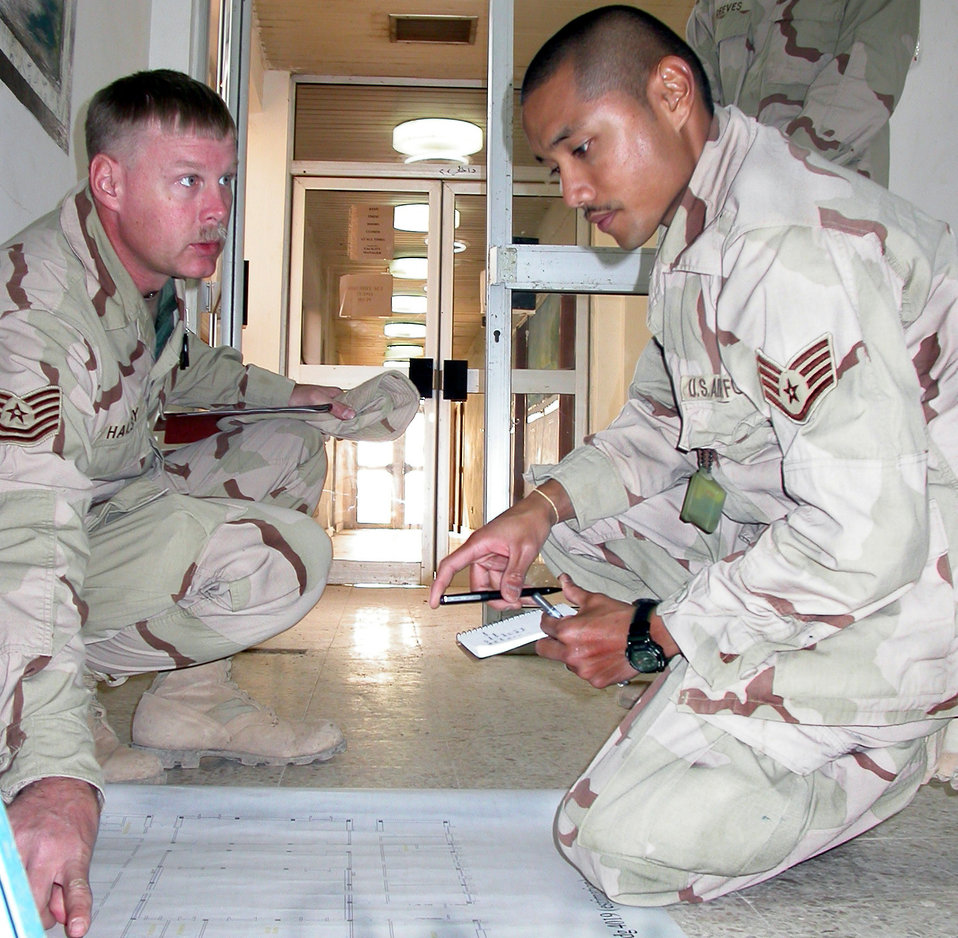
Big plans

BALAD AIR BASE, Iraq -- Tech. Sgt. Todd Halsey and Staff Sgt. Nelsen Bernardo discuss which rooms in a building here need to be surveyed for future upgrades. Many of the buildings require a lot of work because the base was abandoned after being bombed during the 1991 Gulf War. Both airmen are electricians deployed from Kadena Air Base, Japan.